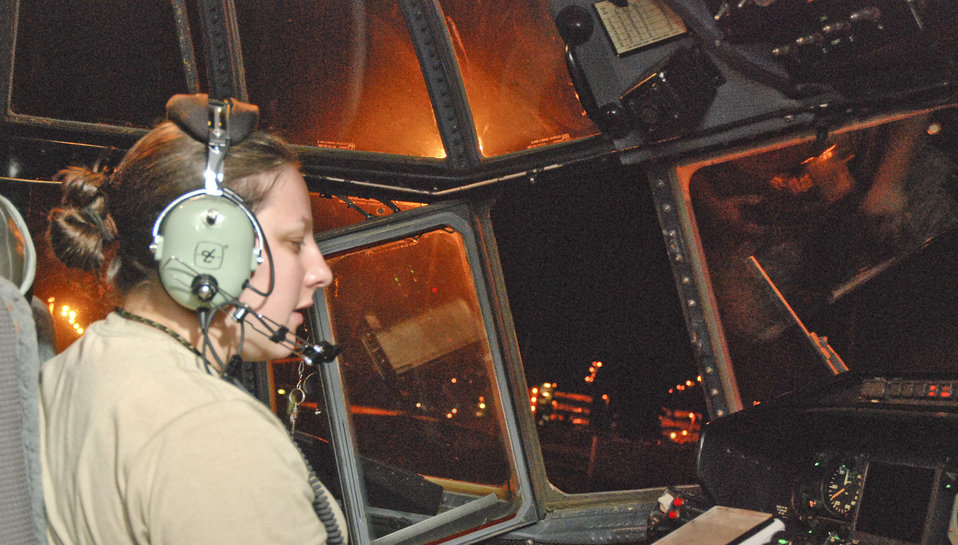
Aircrew, maintainers tackle Haiti relief effort

Staff Sgt. Gina Cerquozzi communicates with another maintenance technician on a C-130 Hercules aircraft while troubleshooting an auxiliary fuel tank indicator problem Jan. 27, 2010 at Muniz Air Base, Puerto Rico. Sergeant Cerquozzi is a 35th Expeditionary Airlift Squadron avionics technician from the 302nd Airlift Wing, Peterson Air Force Base, Colo.